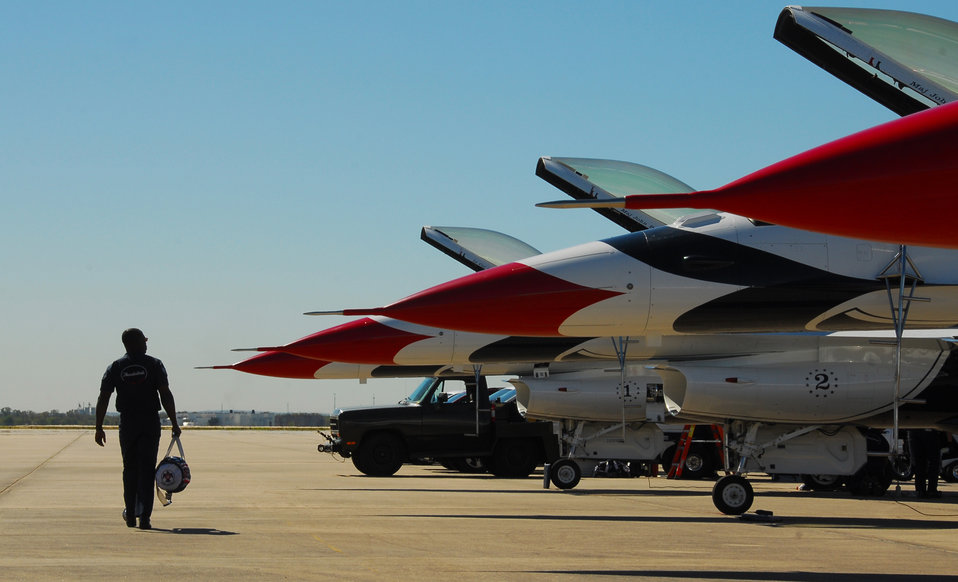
Thunderbird maintainers keep show running behind the scenes

Air Force Thunderbird maintainers finish pre-inspections on the air demonstration team's F-16 Fighting Falcons Nov. 5, 2010, at Lackland Air Force Base, Texas. The Thunderbirds performed an air show Nov. 6 and 7 at Lackland AFB's AirFest 2010.